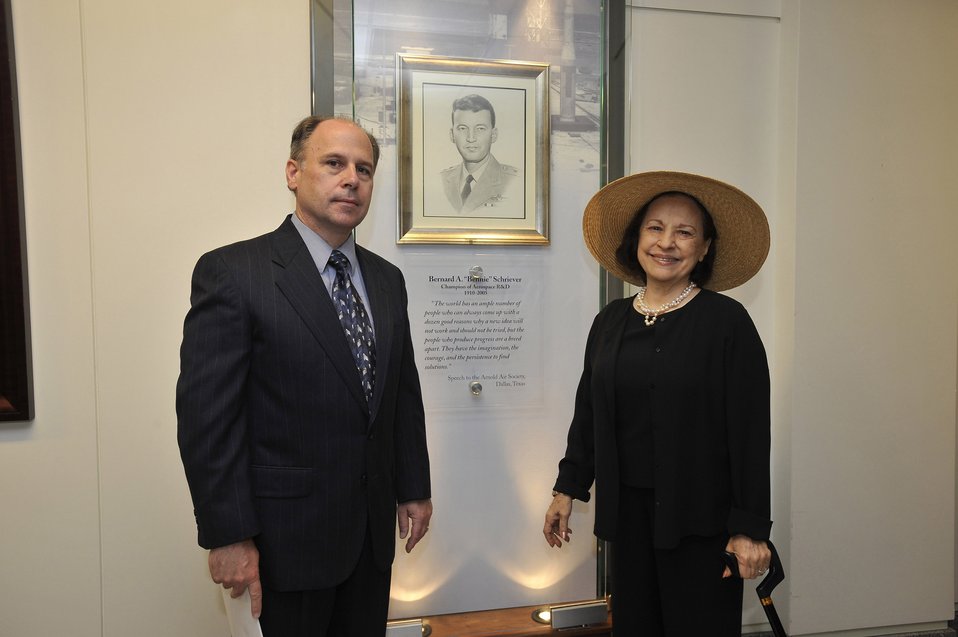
Officials unveil portrait of AF pioneer

Joni James, widow of Gen. Bernard Schriever, and Air Force visual information specialist Thomas Segars pose in front of a portrait of General Schriever during a ceremony for the unveiling of the portrait July 8 at the Pentagon. The portrait, a pencil drawing by Mr. Segars, will hang permanently as a memorial to General Schriever.